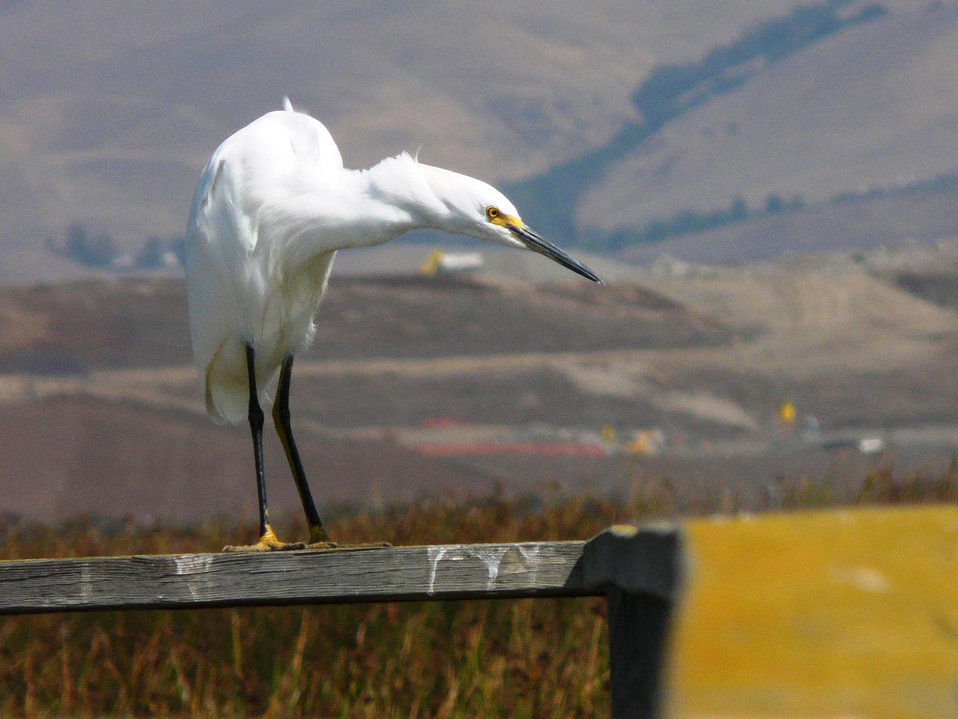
Snowy egret

Don Edwards San Francisco Bay National Wildlife Refuge.